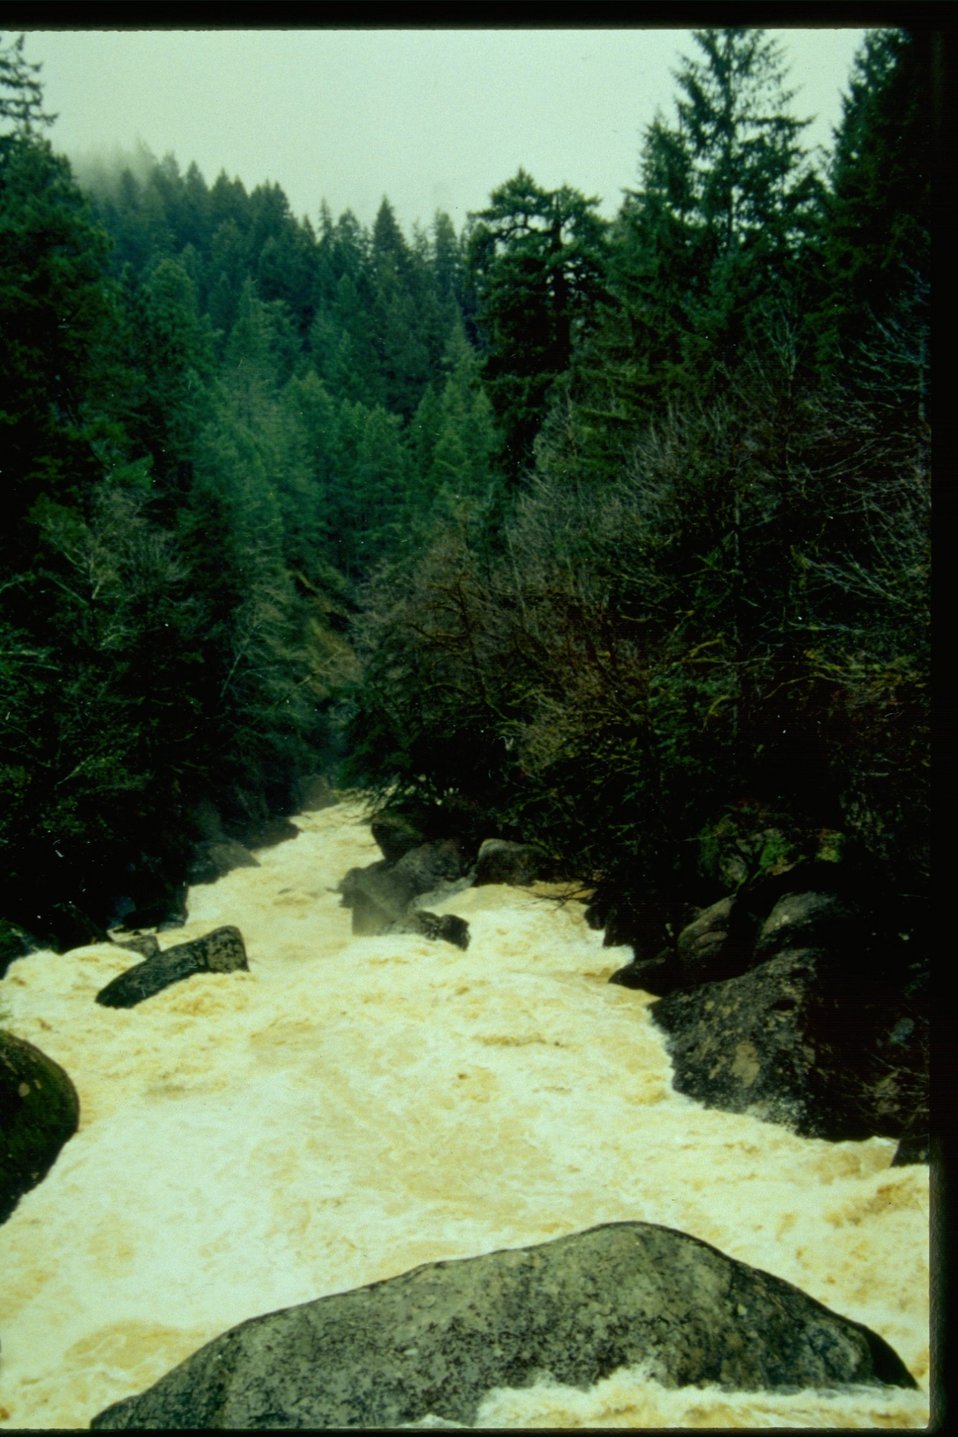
Mill Creek, downstream.